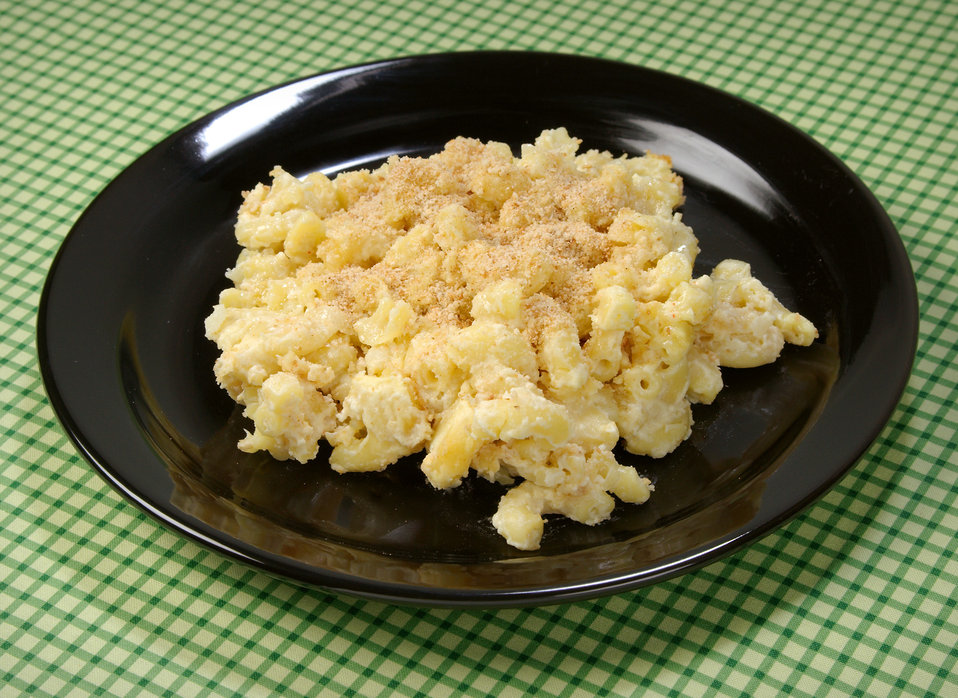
This image depicts a plate of macaroni and cheese. The original recipe uses whole milk, butter, and full-fat cheese, a recipe that contains about 540 calories in one serving, which equals 1 cup.If I cut calories, won't I be hungry?